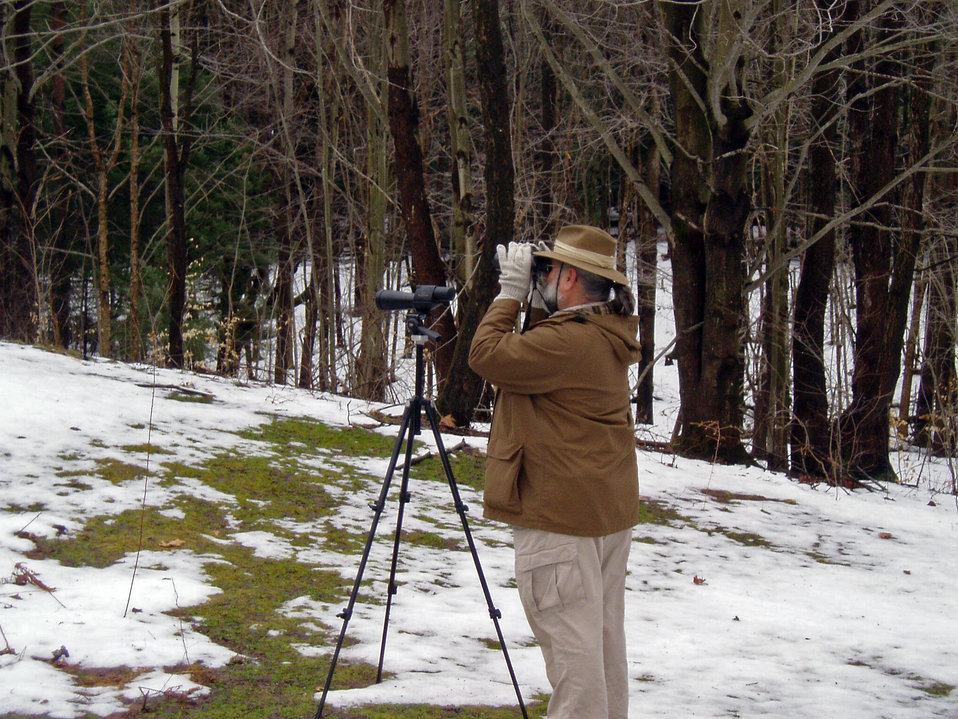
Wildlife viewing

Erie National Wildlife Refuge in Pennsylvania.